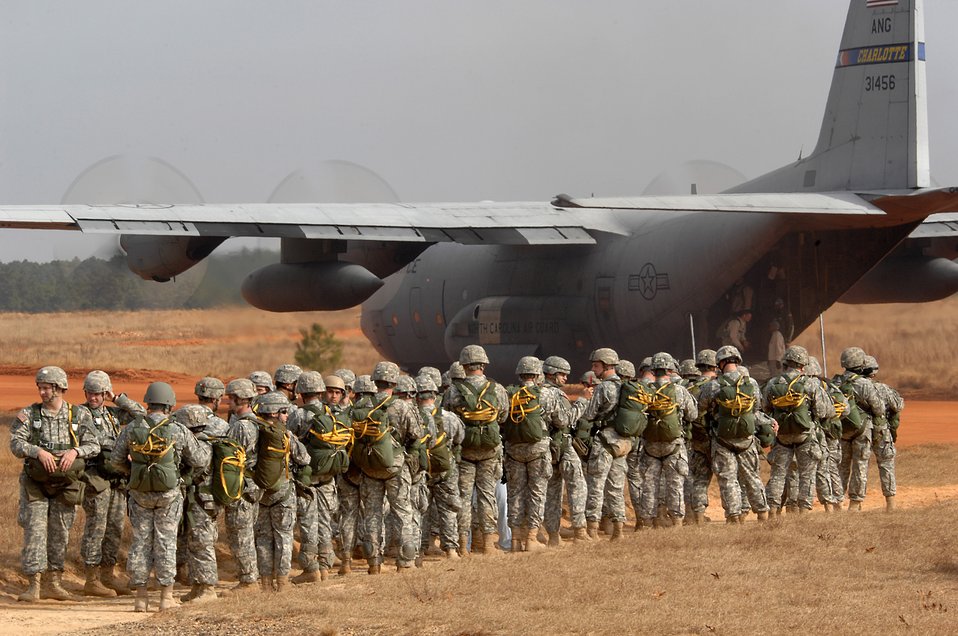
Operation Toy Drop

Army Soldiers from the 82nd Airborne Division from Fort Bragg, N.C., prepare to board a C-130 Hercules during Operation Toy Drop Dec. 6 at Fort Bragg. Operation Toy Drop is an annual Airborne jump at Fort Bragg in its 11th year hosted by the Army Civil Affairs and Psychological Operations Command (Airborne), and supported by Fort Bragg's XVIII Airborne Corps and the Air Force Reserve Command's 440th Airlift Wing at Pope Air Force Base that gives Soldiers and Airmen the opportunity to help local families in need over the holidays while boosting morale and incorporating valuable training. More than 3,000 Soldiers donated a toy for a lottery ticket and the chance to jump under a foreign jumpmaster, earning them their foreign jump wings. This year, German and Irish jumpmasters will be issuing the commands from C-130 Hercules aircraft during the operation.